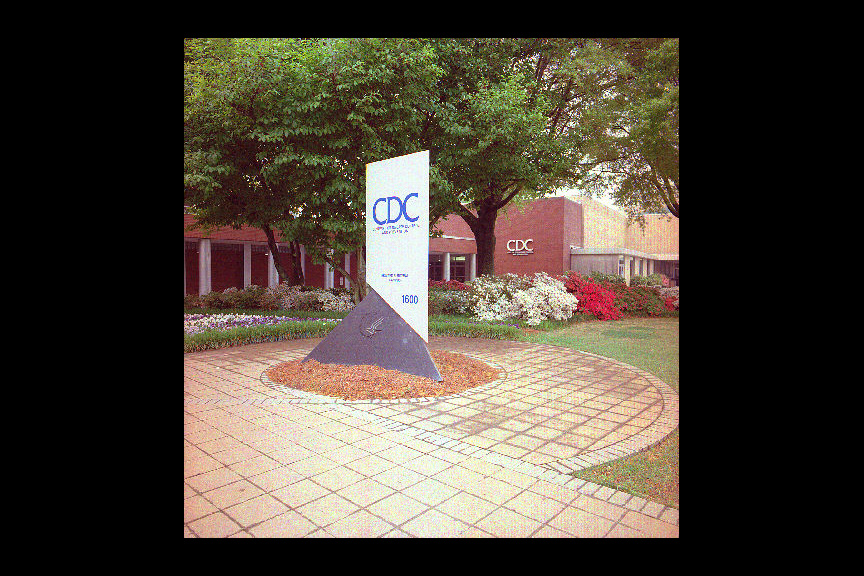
Centers for Disease Control (CDC) sign and Buildings 1 and 2.